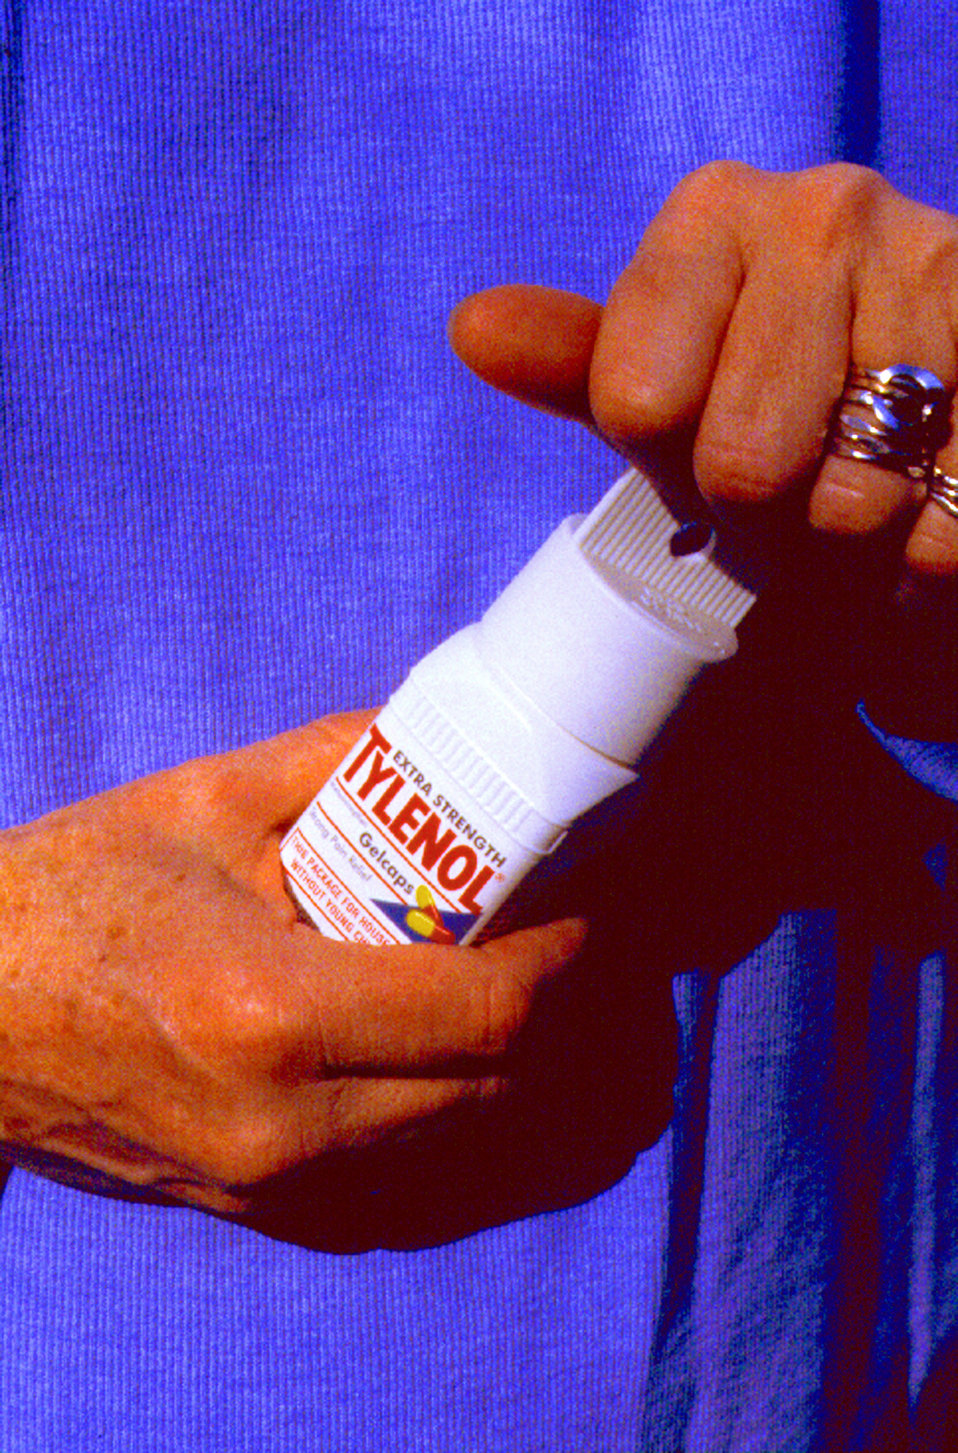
This is one of two PHIL images, (see PHIL# 9131), depicting an example of an easy-open Tylenol� pill bottle. This design made it easier for those with hand strength and grasp problems to open the bottle. The squared-off, flanged cap with its rounded edges, created a shape which had sides that one could firmly grasp, in order to prevent rotation. The larger then normal sized bottle also helped it fit better in an adult's hands, and in the case of an arthritis patient, made it easier to close as well. Such a design illustrated how concern was paid to those with mobility impairments of the hands, but lead to a design that benefited anyone who might purchase this medication. In this particular image, a person was grasping the medication bottle depicted in PHIL# 9131, while using the flanged to in order to manipulate the container's cap.